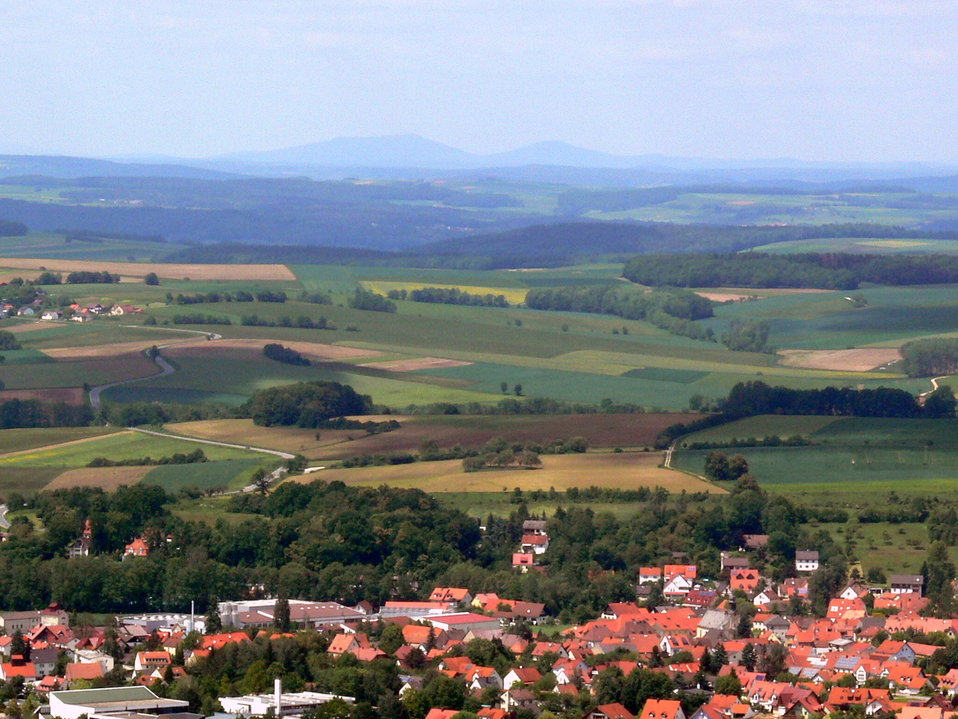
052 Scheßlitz, Gleichberge